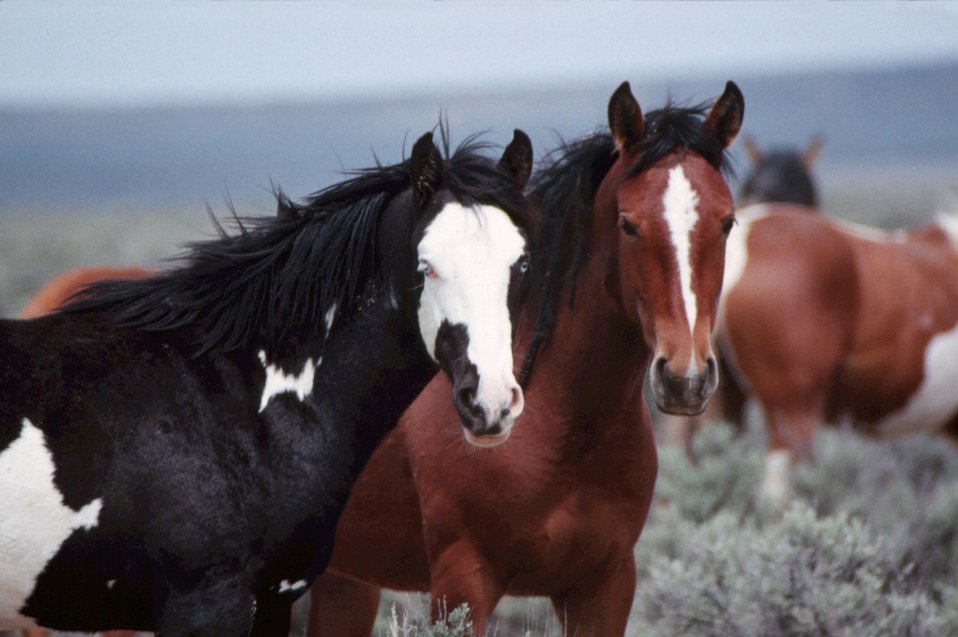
South Steens Wild Horse Management Heard Area.